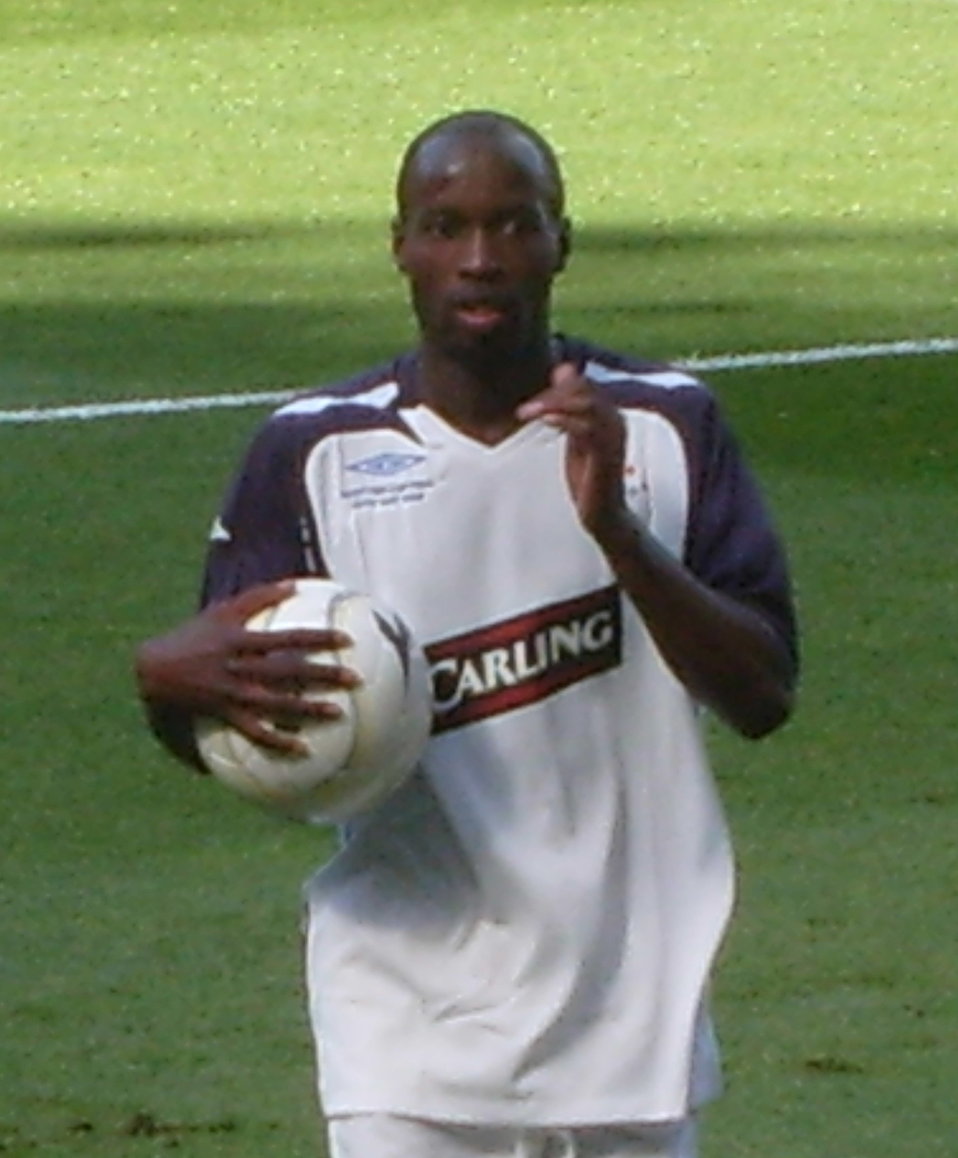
Beasley carries the ball to a corner in the Scottish Cup Final, 2008